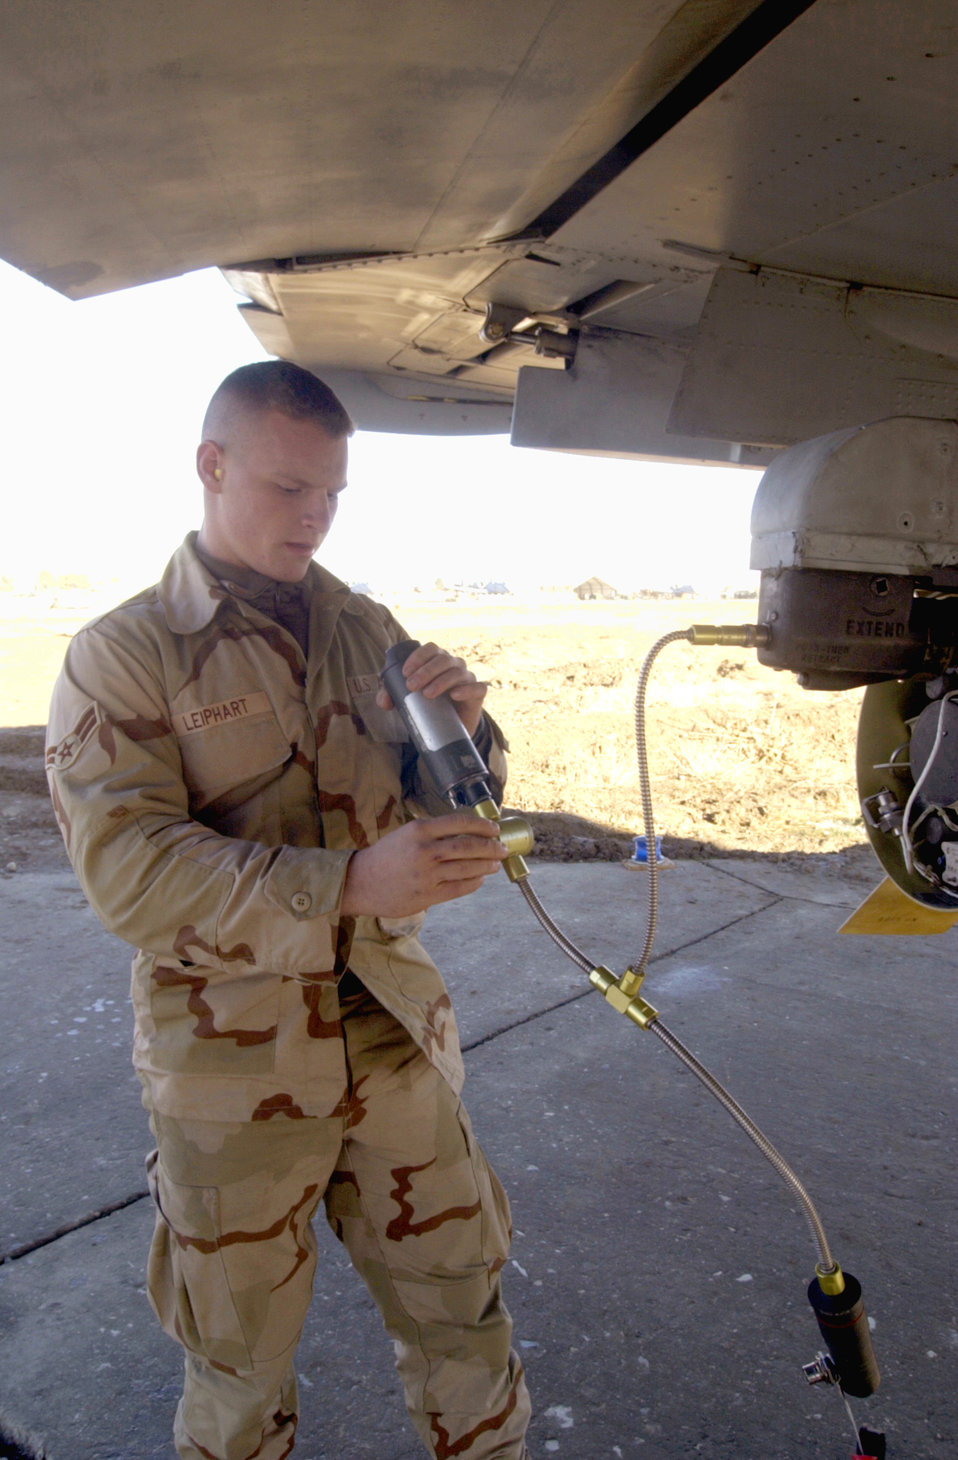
Close-air support

BAGRAM AIR BASE, Afghanistan -- Airman 1st Class Joseph Gumienny arms the weapons and inspects munitions to ensure an A-10 Thunderbolt II is ready for takeoff here Nov. 17. Airmen of the 354th Expeditionary Fighter Squadron are providing close-air support to the Army's 10th Mountain Division as it pursues Taliban and al-Qaida forces during Operation Mountain Resolve. Gumienny u=is deployed from Davis-Monthan Air Force Base, Ariz.